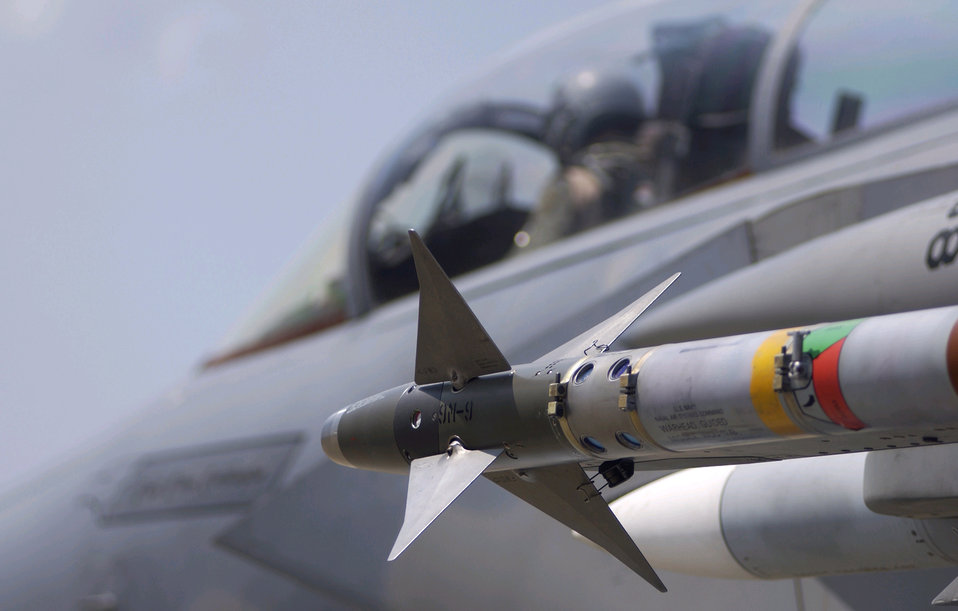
Loaded for noble mission

LANGLEY AIR FORCE BASE, Va. -- An F-15 Eagle moves into position for take off before a sortie supporting Operation Noble Eagle here July 16. The F-15 is assigned to the 71st Fighter Squadron.